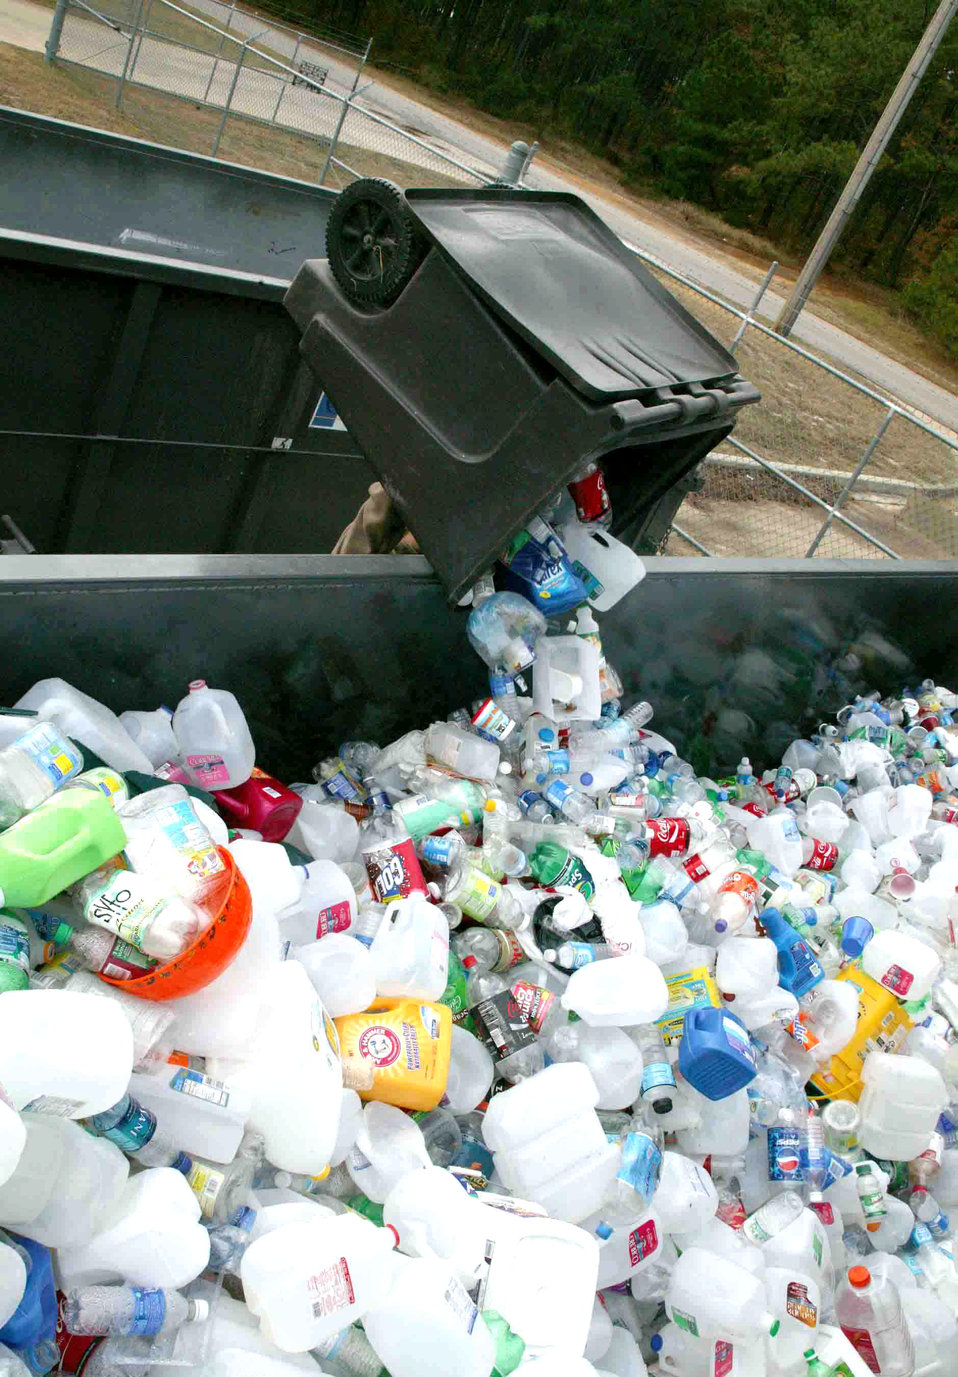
One man's trash is another man's treasure

Dana Green dumps a load of plastic bottles into a recycle bin Nov. 27 at Shaw Air Force Base, S.C. Base officials recycle aluminum cans, plastic and glass bottles, office paper, newspaper, magazines, cardboard, printer cartridges, shoes and metals. Mr. Green is a Shaw AFB recycle center attendant.